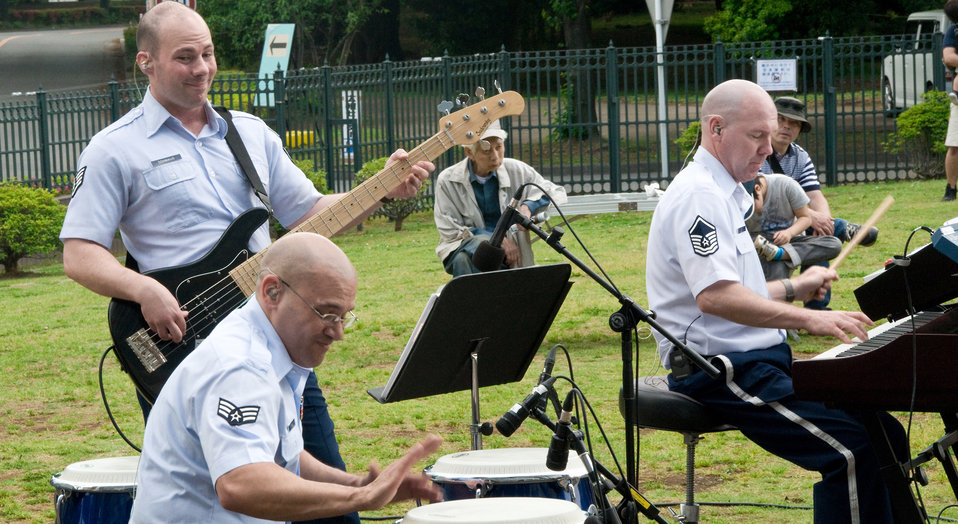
PACAF band plays music to help lift spirits

Members from the U.S. Air Force Band of the Pacific-Asia's Pacific Trends perform May 8, 2011, in Nerima City, Japan. The band was invited to perform in support of people affected by the 9.0-magnitude earthquake and tsunami that occurred March 11, 2011.